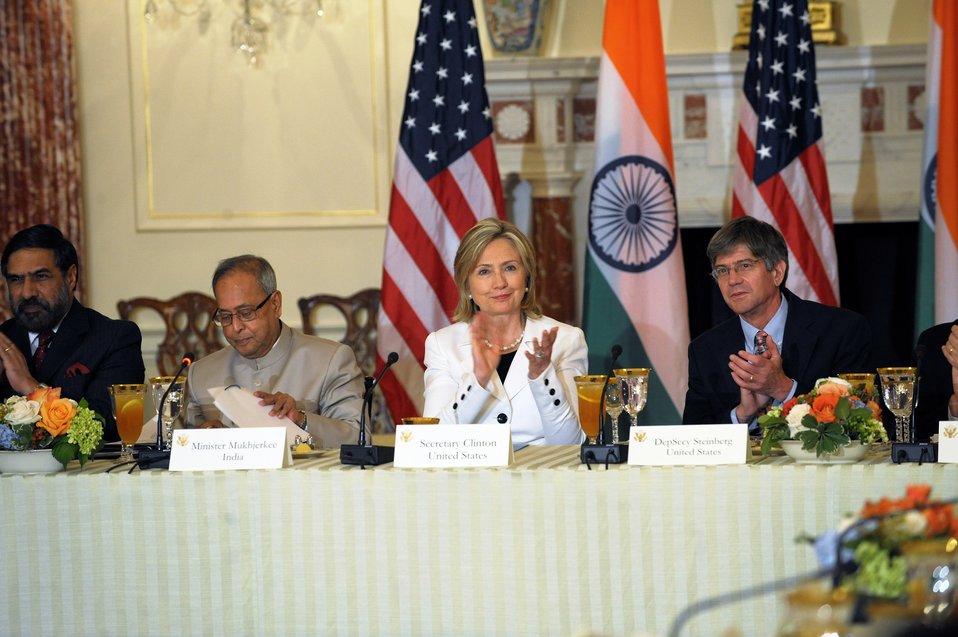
Secretary Clinton Delivers Opening Remarks at U.S.-India CEO Forum Luncheon

U.S. Secretary of State Hillary Rodham Clinton delivers opening remarks at a luncheon co-hosted by U.S. Deputy Secretary Jim Steinberg and U.S. Under Secretary for Economic, Energy and Agricultural Affairs Robert Hormats for the U.S.-India CEO Forum at the U.S. Department of State in Washington, D.C., on June 22, 2010.